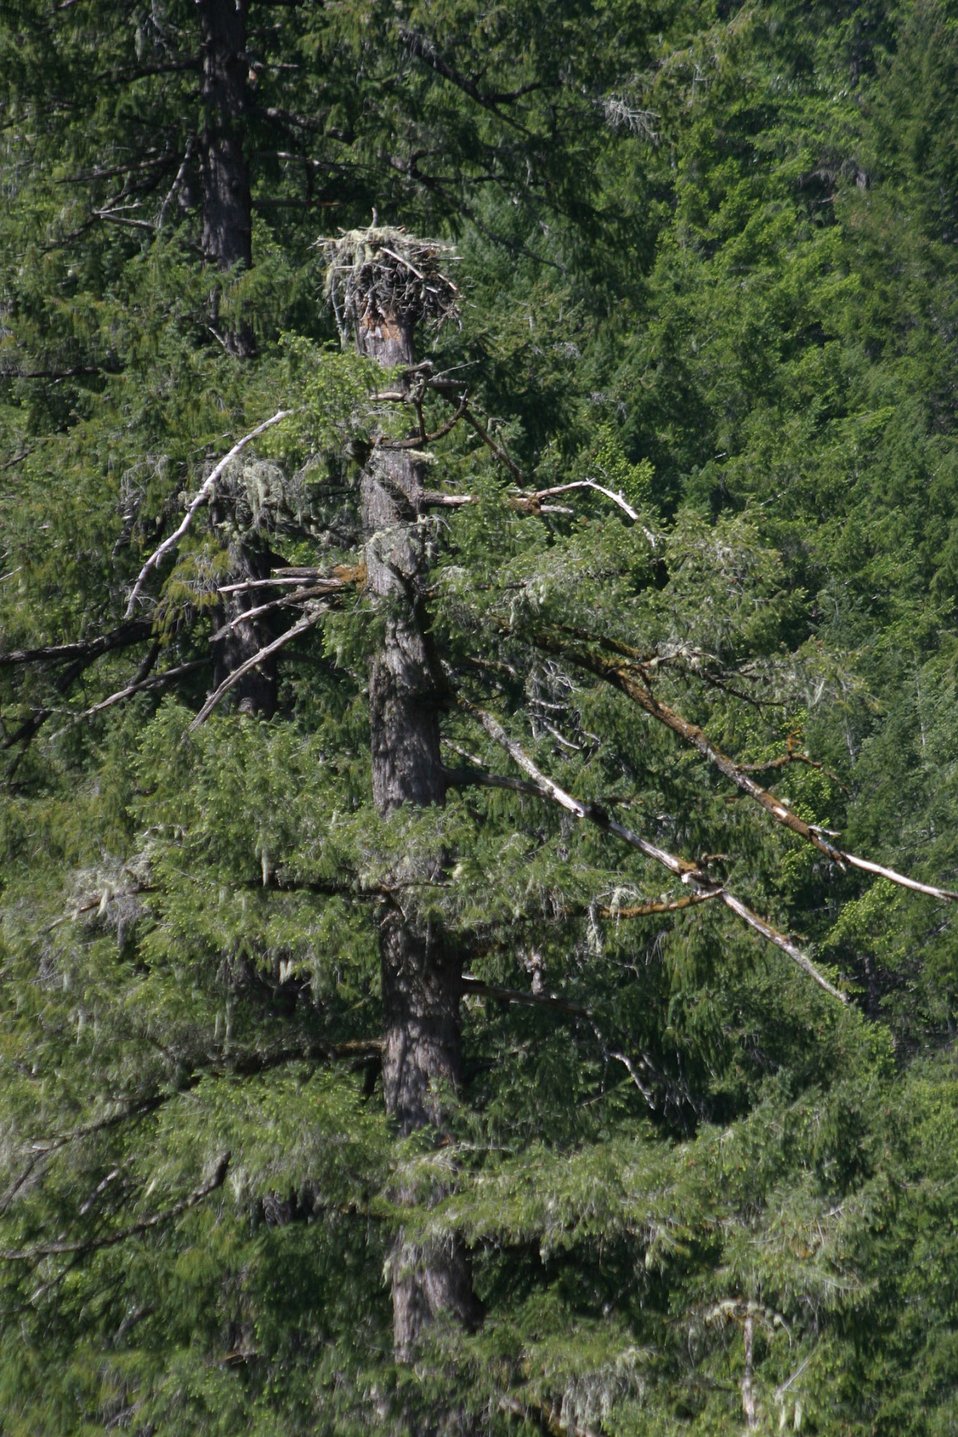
Wild section of the Rogue River from Grave Creek to Foster Bar May 19 to May 22.